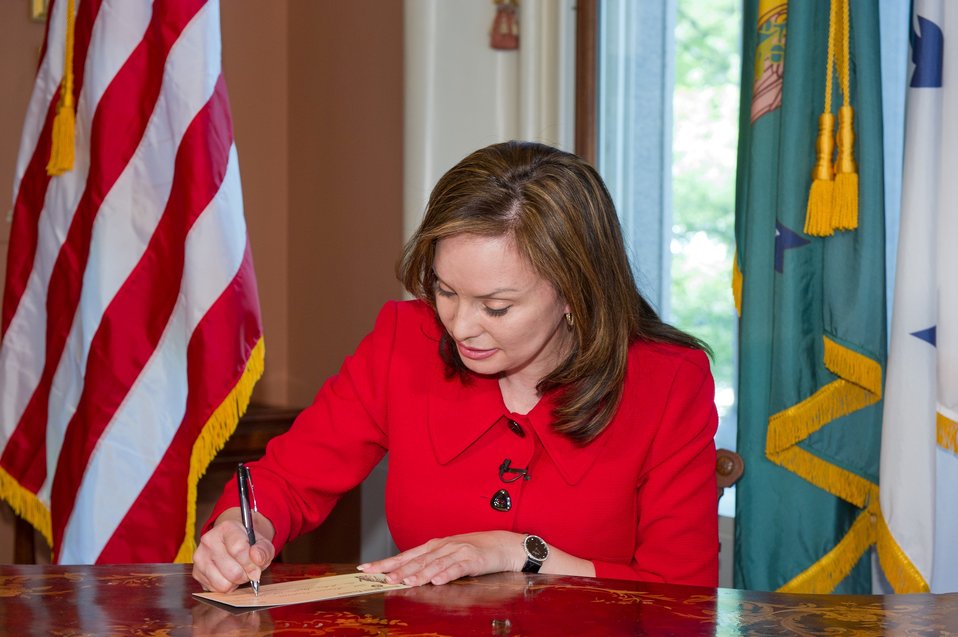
Treasury Moves to Electronic Payment Methods for Federal Benefits

Beginning May 1, anyone newly applying for Social Security, Veterans Affairs or other federal benefits will need to choose an electronic payment method, including direct deposit or a pre-paid debit card. People currently receiving their federal benefits by paper check must switch to an electronic payment method by March 1, 2013. Treasurer Rosie Rios signed a ceremonial check to American taxpayers for the $1 billion that will be saved over the next 10 years.